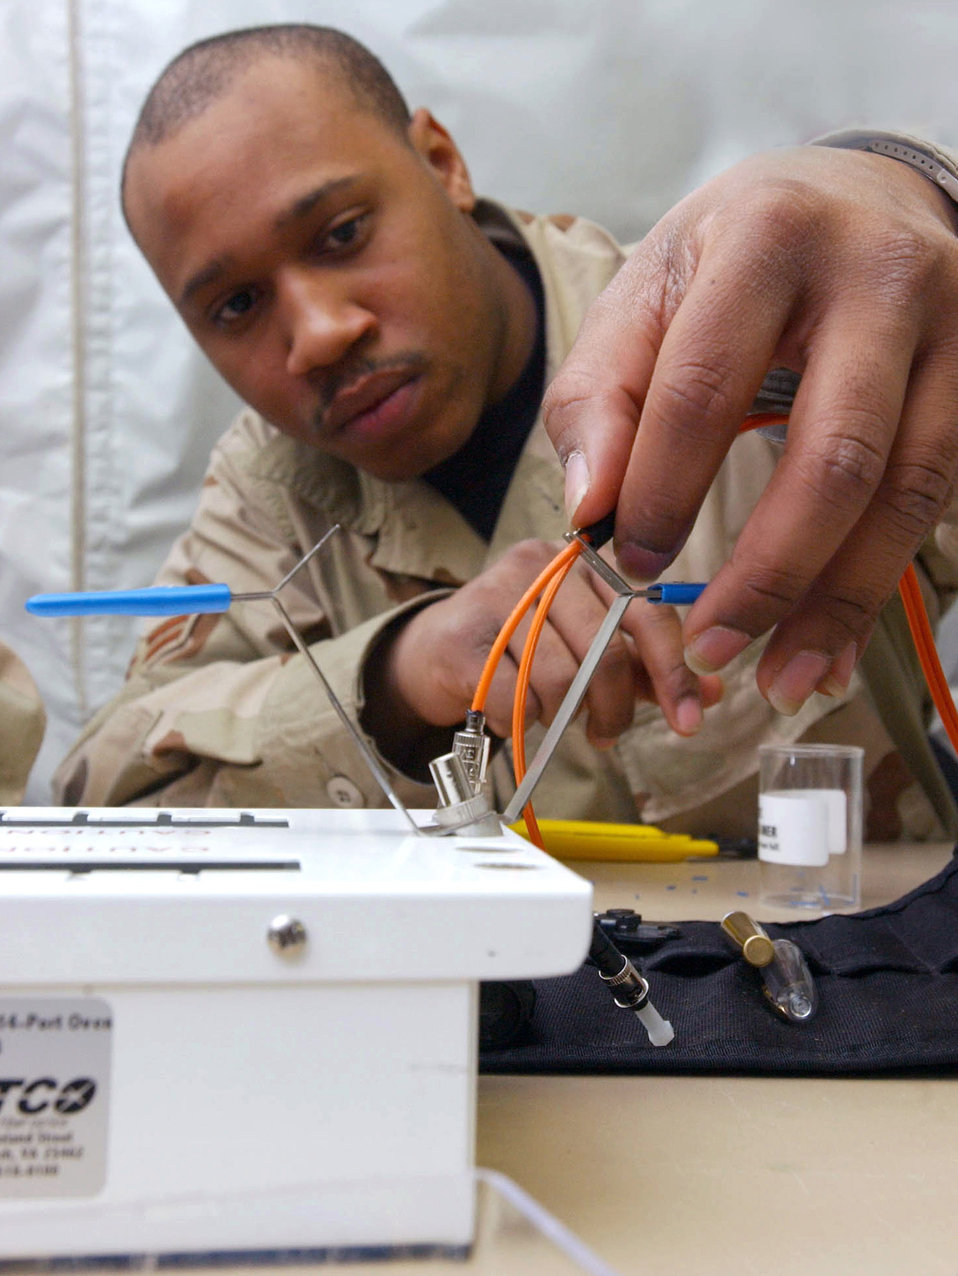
In a fix

OPERATION ENDURING FREEDOM -- Airman 1st Class Jonathan Gordon puts a connector into a hot-melt adaptor to fix fiber optic cable. Gordon is deployed to Ganci Air Base, Kyrgyzstan, from Holloman Air Force Base, N.M.